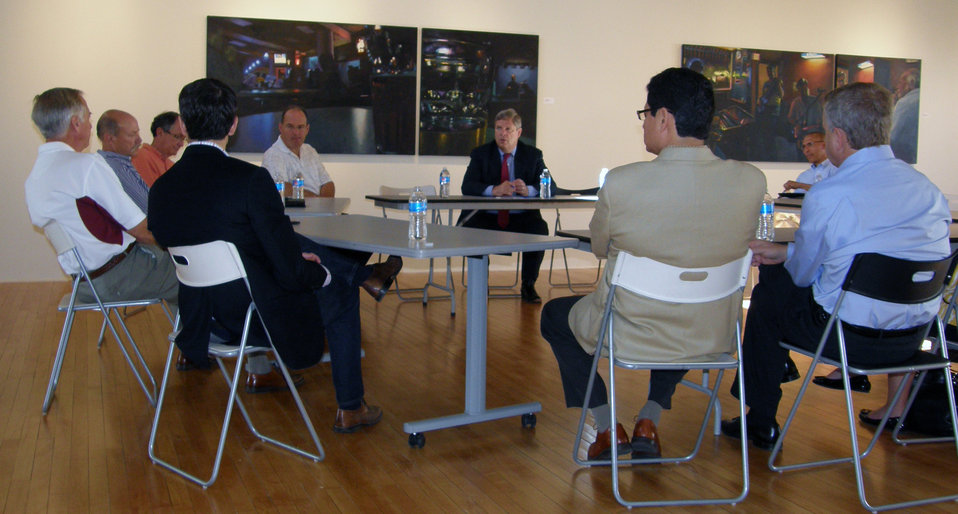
Agriculture Secretary Tom Vilsack and roundtable participants at the Cedar Rapids Gallery, in Cedar Rapids, IA, on Saturday, October 8, 2011. Secretary Vilsack is in Iowa to promote President Obama's American Jobs Act and trade agreements.